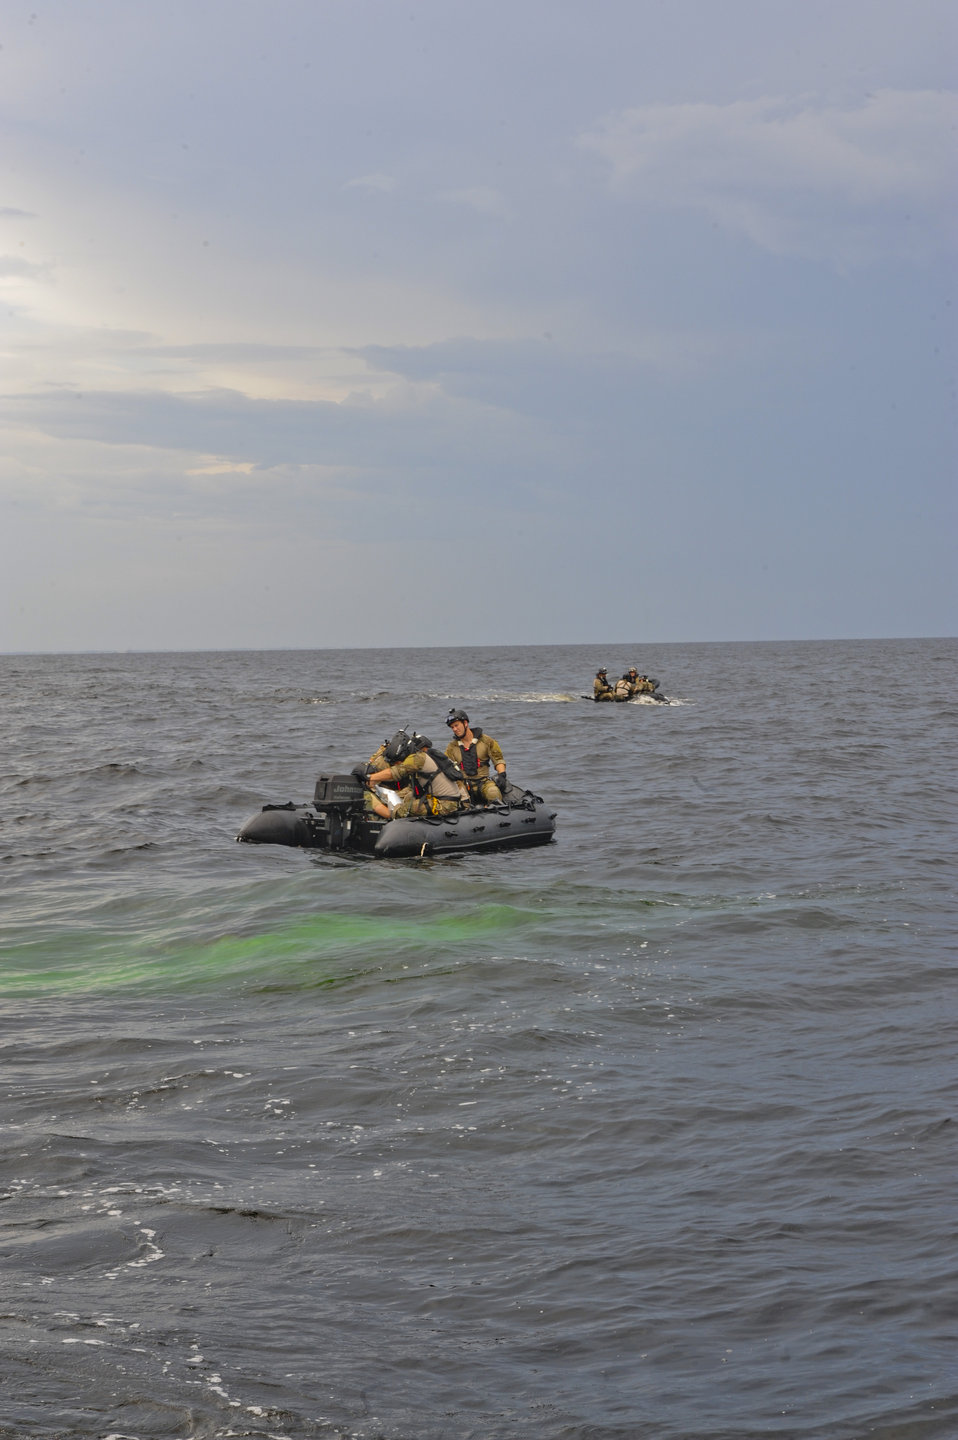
Water rescue

Two 38th Rescue Squadron pararescue teams from Moody Air Force Base, Ga., apply first aid to two downed pilots during a water rescue exercise in the Gulf of Mexico on Aug. 14, 2012. The exercise trained members of the 347th Rescue Group on how to locate and recover downed personnel in the open seas.